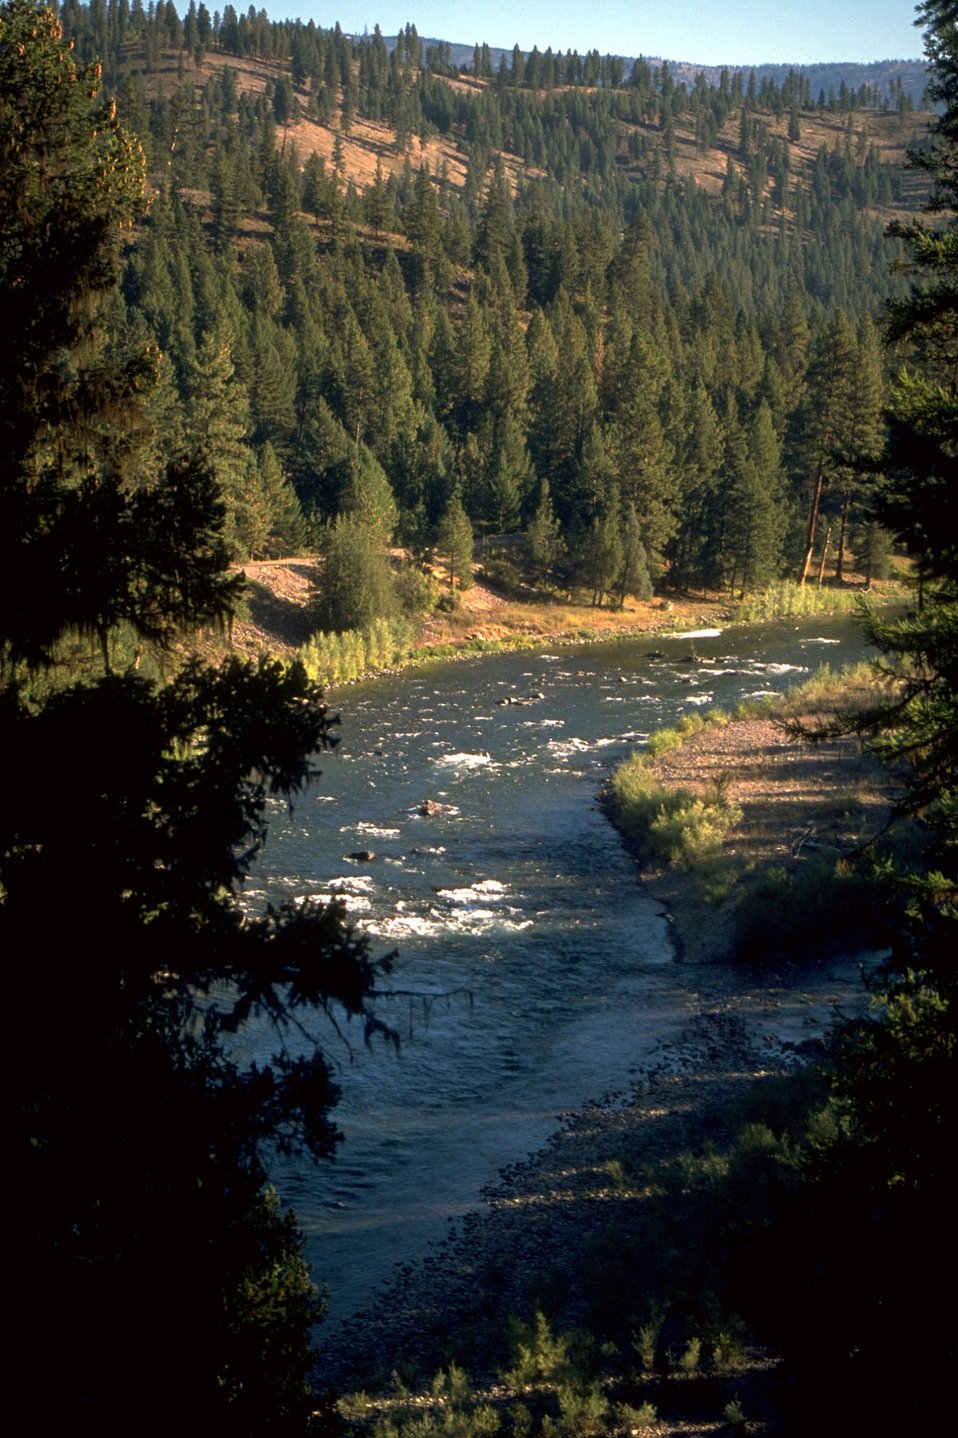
Blackfoot River VERTICAL